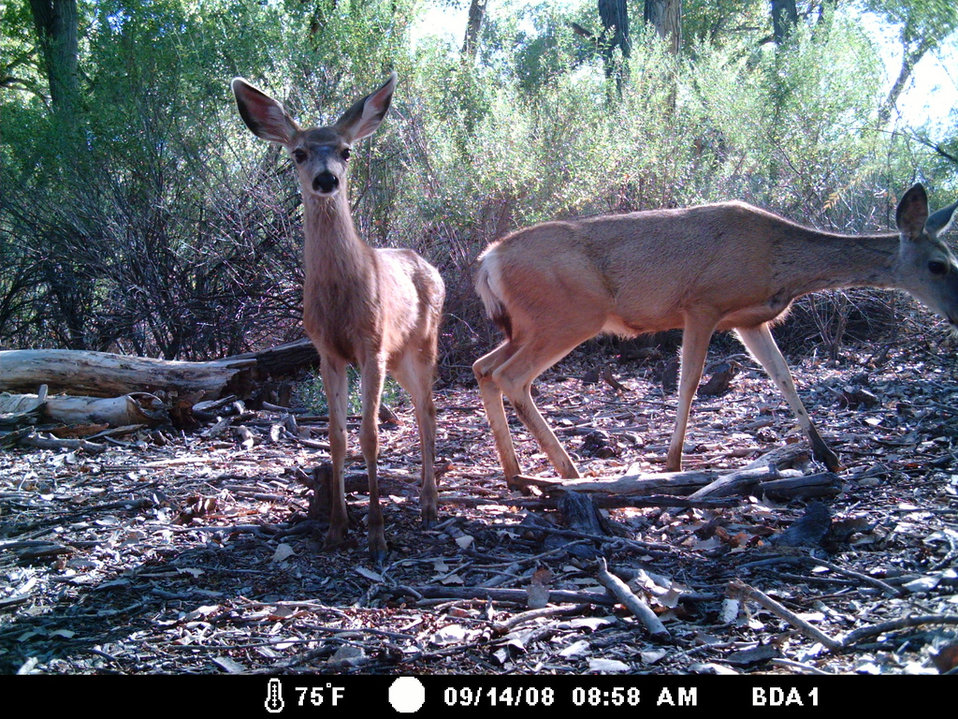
mule deer

Bosque del Apache National Wildlife Refuge, NM
Camera trap project by Matthew Farley, Jennifer Miyashiro and James Stuart
Photo made available by J.N. Stuart, Creative Commons